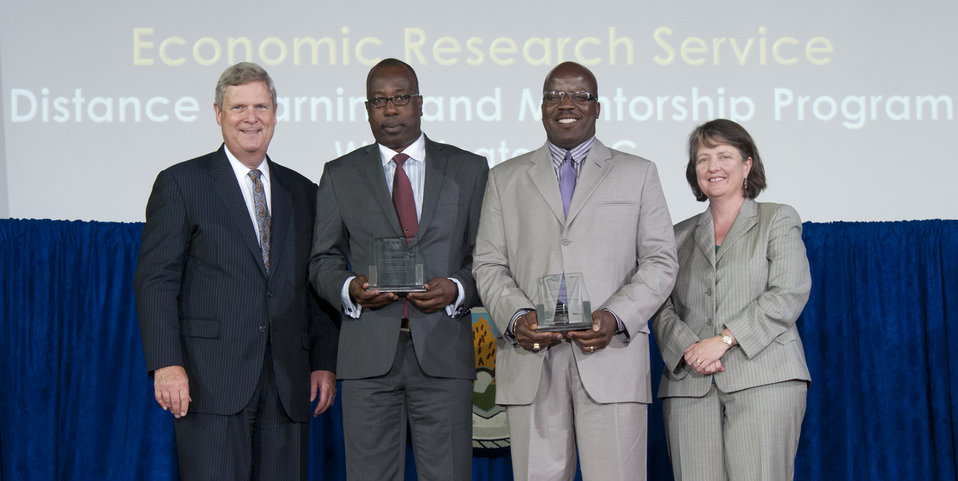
Agriculture Secretary Tom Vilsack and Agriculture Deputy Secretary Kathleen Merrigan present the Secretary’s Honor Award to the Distance Learning and Mentorship Program Economic Research Service (ERS) group leaders Keithly Jones and Christopher Davis at the U.S. Department of Agriculture (USDA) 64th Annual Honor Awards Ceremony in Washington, D.C. on Wednesday, Sept. 12, 2012. Distance Learning and Mentorship Program received their award for sustained excellence and foresight in developing a more diverse community of agricultural economists and policy analysts through the ERS Distance Learning and Mentorship Program for minority-serving institutions.